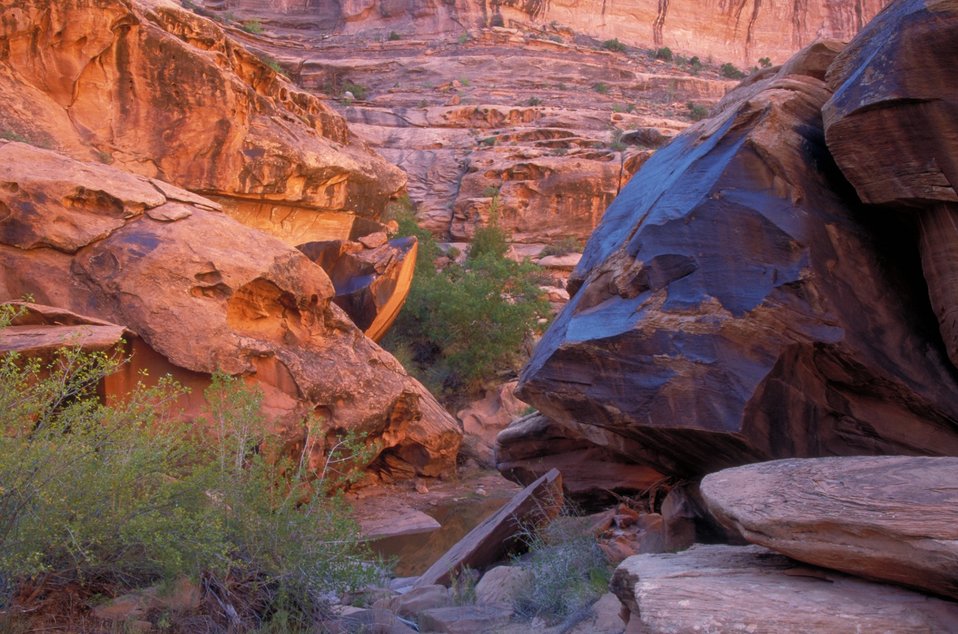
Hunter Canyon near Moab, Utah.